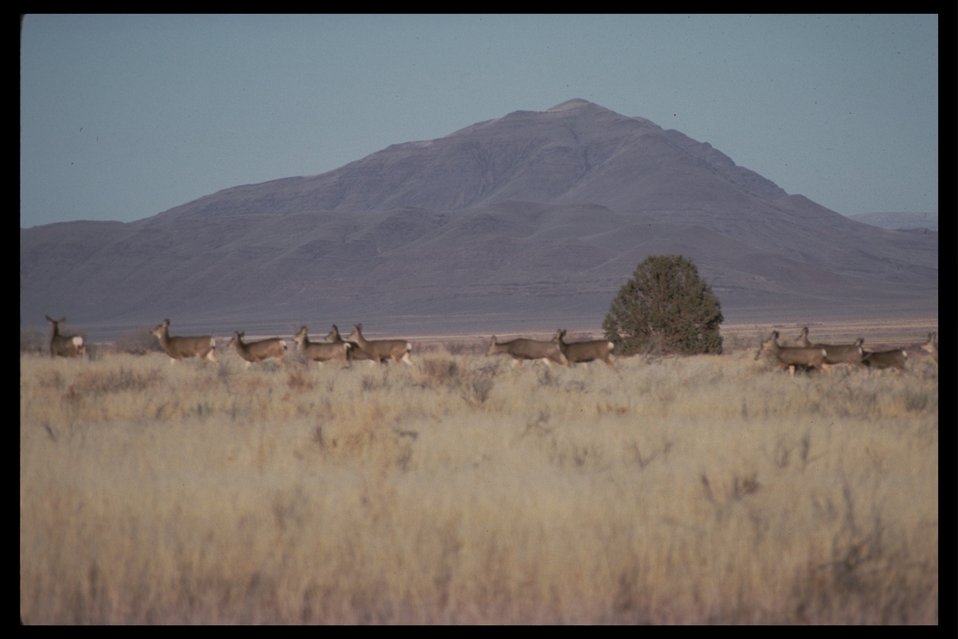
Mule deer in foregound and Mickey Butte in back ground near Table Mountain. (WSA 2-72F)